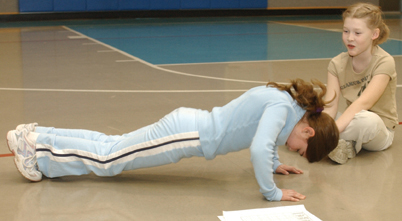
Space command takes youth fitness to new level

MALMSTROM AIR FORCE BASE, Mont. -- Sarah MacClellan counts off the number of push-ups by Victoria Bishop at the youth center here. Air Force Space Command bases are incorporating the Air Force initiative,